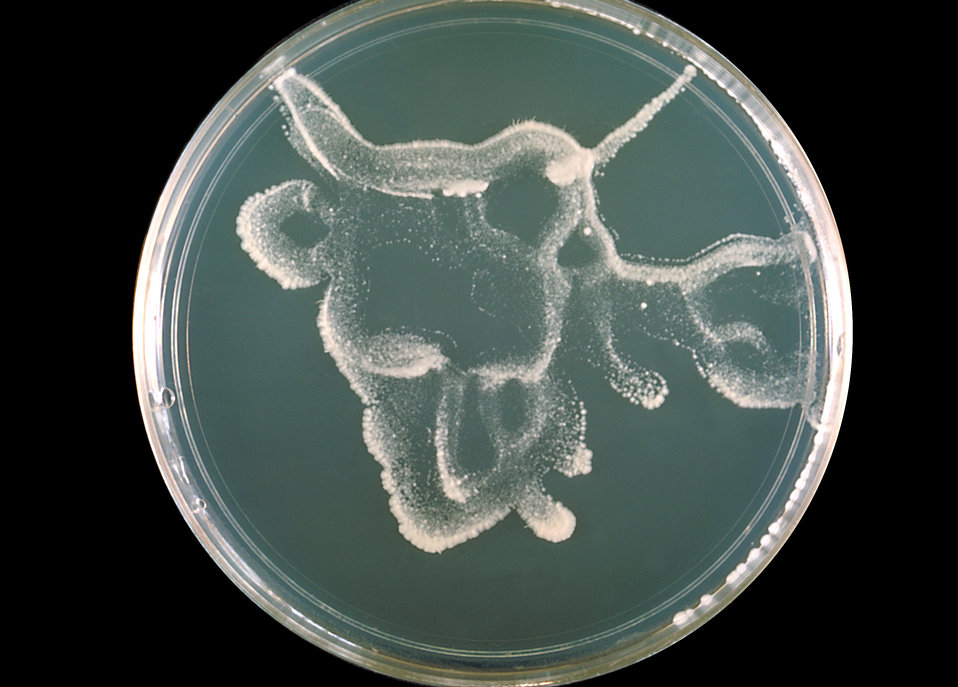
This is a plate culture of the fungus Candida albicans, strain 7H10, grown at 37�C.